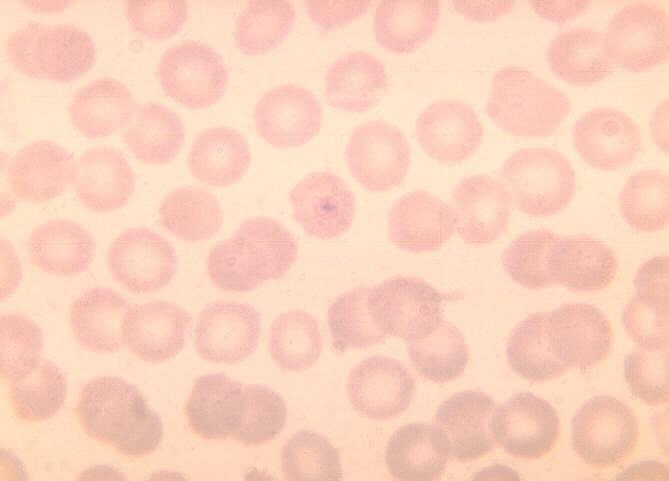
Plasmodium ovale, young ring.